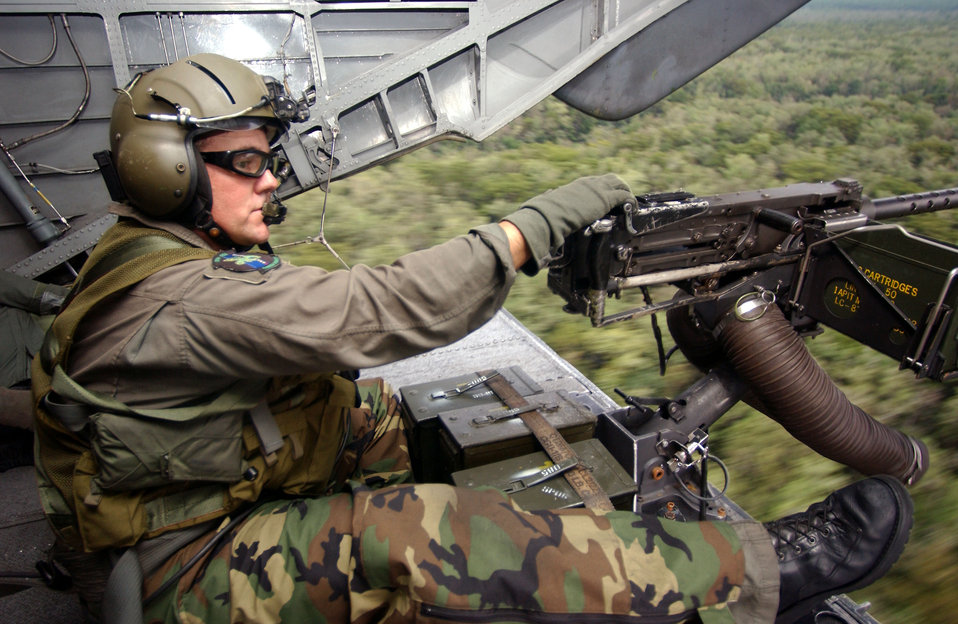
Low rider

OVER FLORIDA -- An MH-53 Pave Low tail gunner sits on the lowered ramp of the aircraft during a low-level training mission over Florida. The tail gunner is assigned to the 20th Special Operations Squadron at Hurlburt Field, Fla.